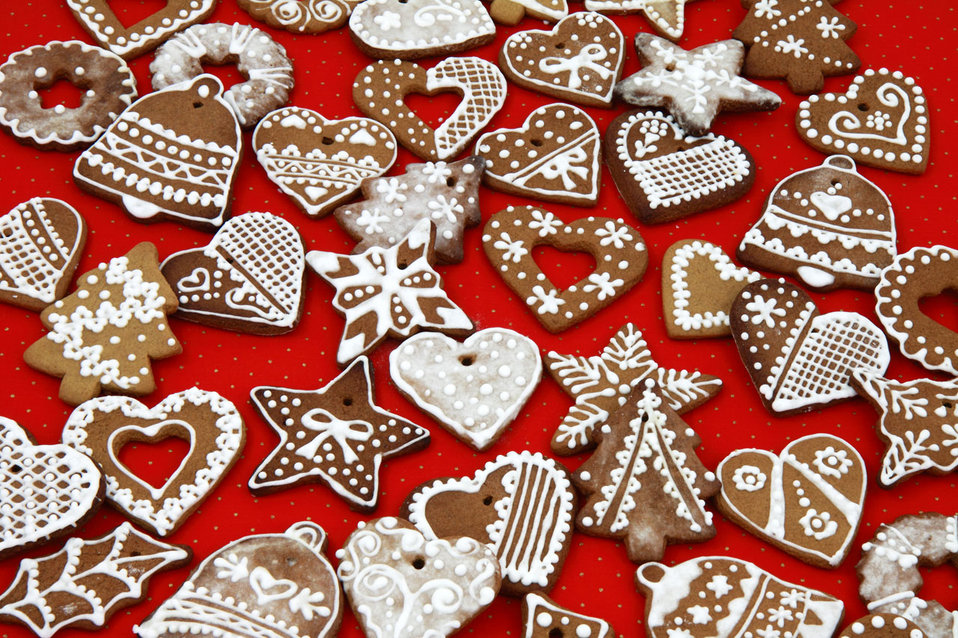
Gingerbread

Christmas shaped gingerbreads.